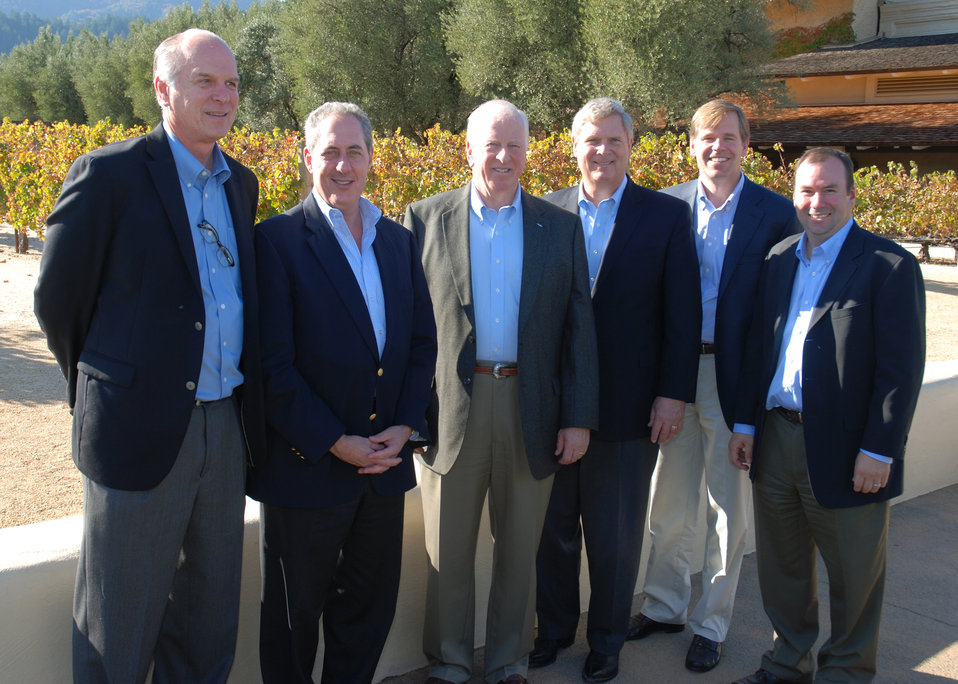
Agriculture Secretary Thomas Vilsack (4th from left), Congressman (CA) Mike Thompson, U.S. Trade Representative Michael Froman, Mondavi Winery representatives, and attendees from the California wine growers' roundtable stand together in front of the Mondavi Winery in Napa, CA on Sunday, Nov. 17, 2013.